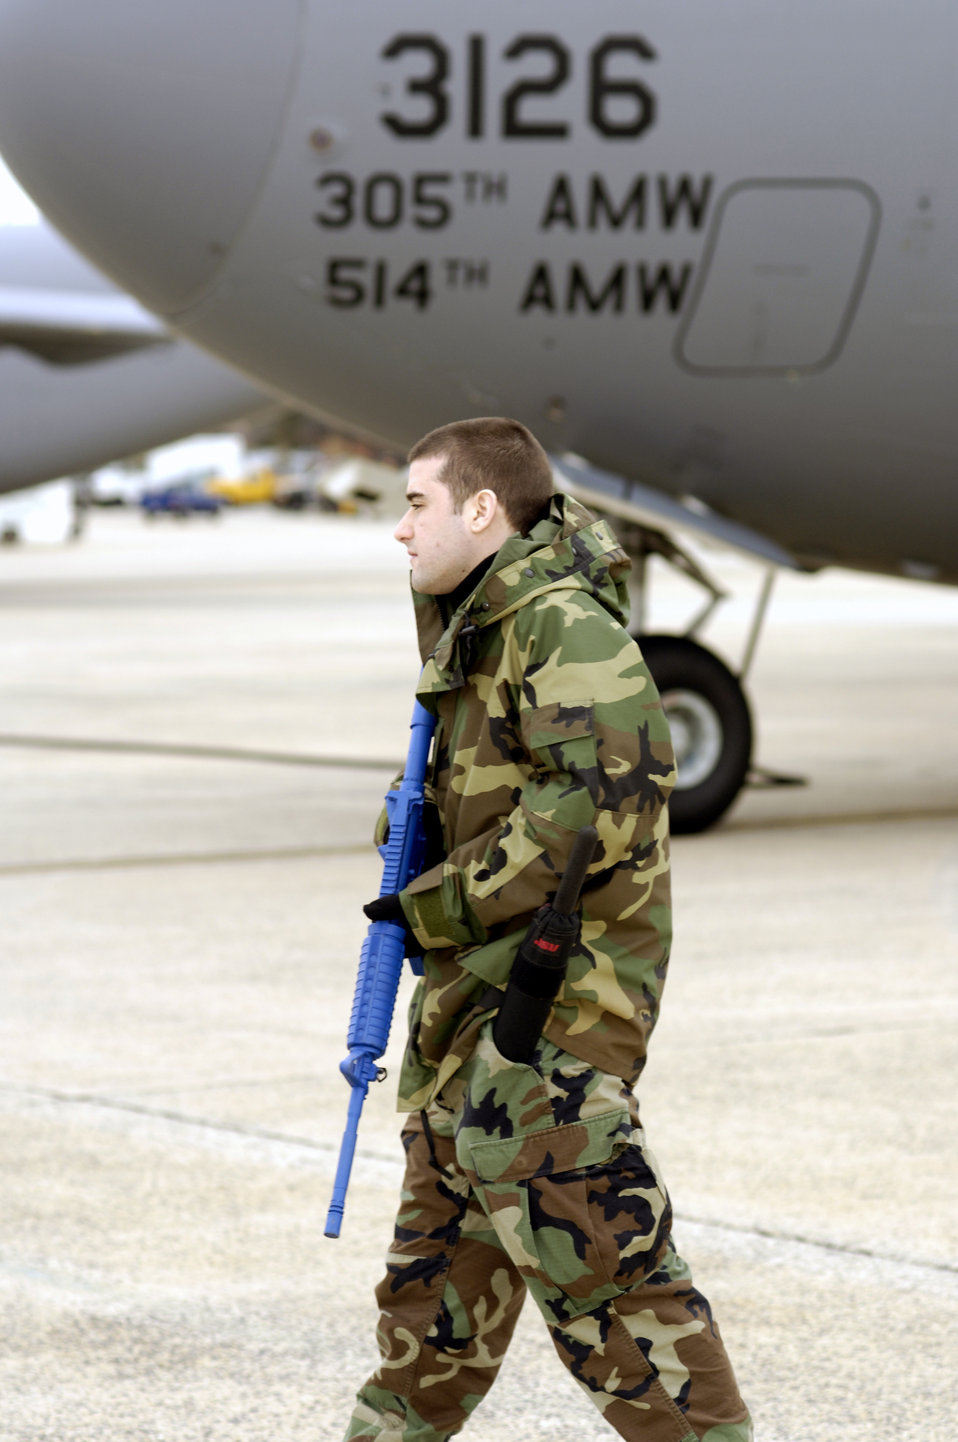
Security forces Airmen complete 'Fly Away' course at Fort Dix

A student in the Air Mobility Warfare Center Fly Away Security Course 07-1 guards the exterior of a C-17 Globemaster III Jan. 16 at McGuire Force Base, N.J. This was the first FAST course taught by the AMWC to prepare the students prior to their departure for deployment to Iraq.